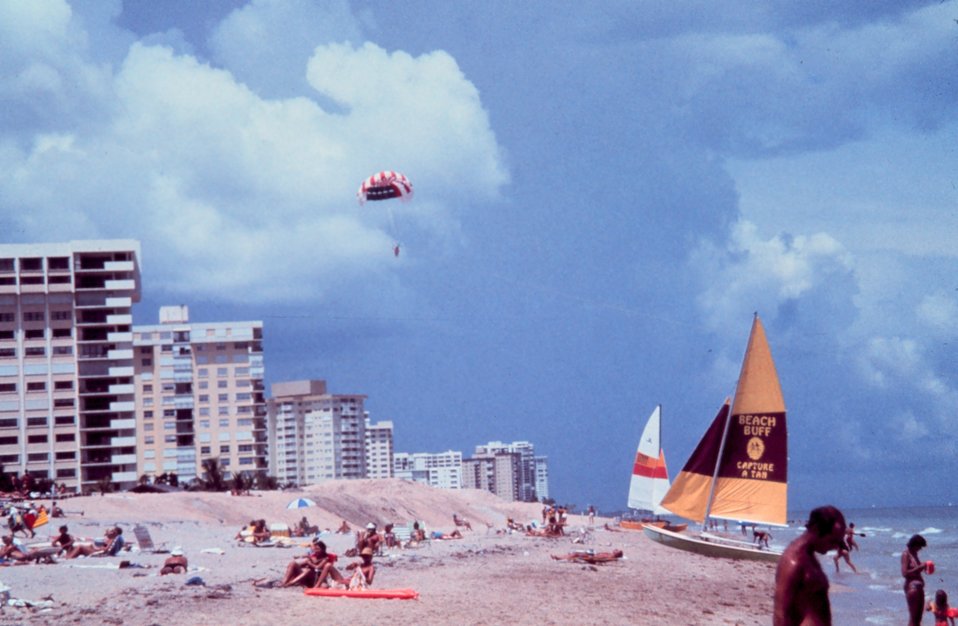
Having fun at Lauderdale by the Sea - sunbathing, sailing, and parasailing